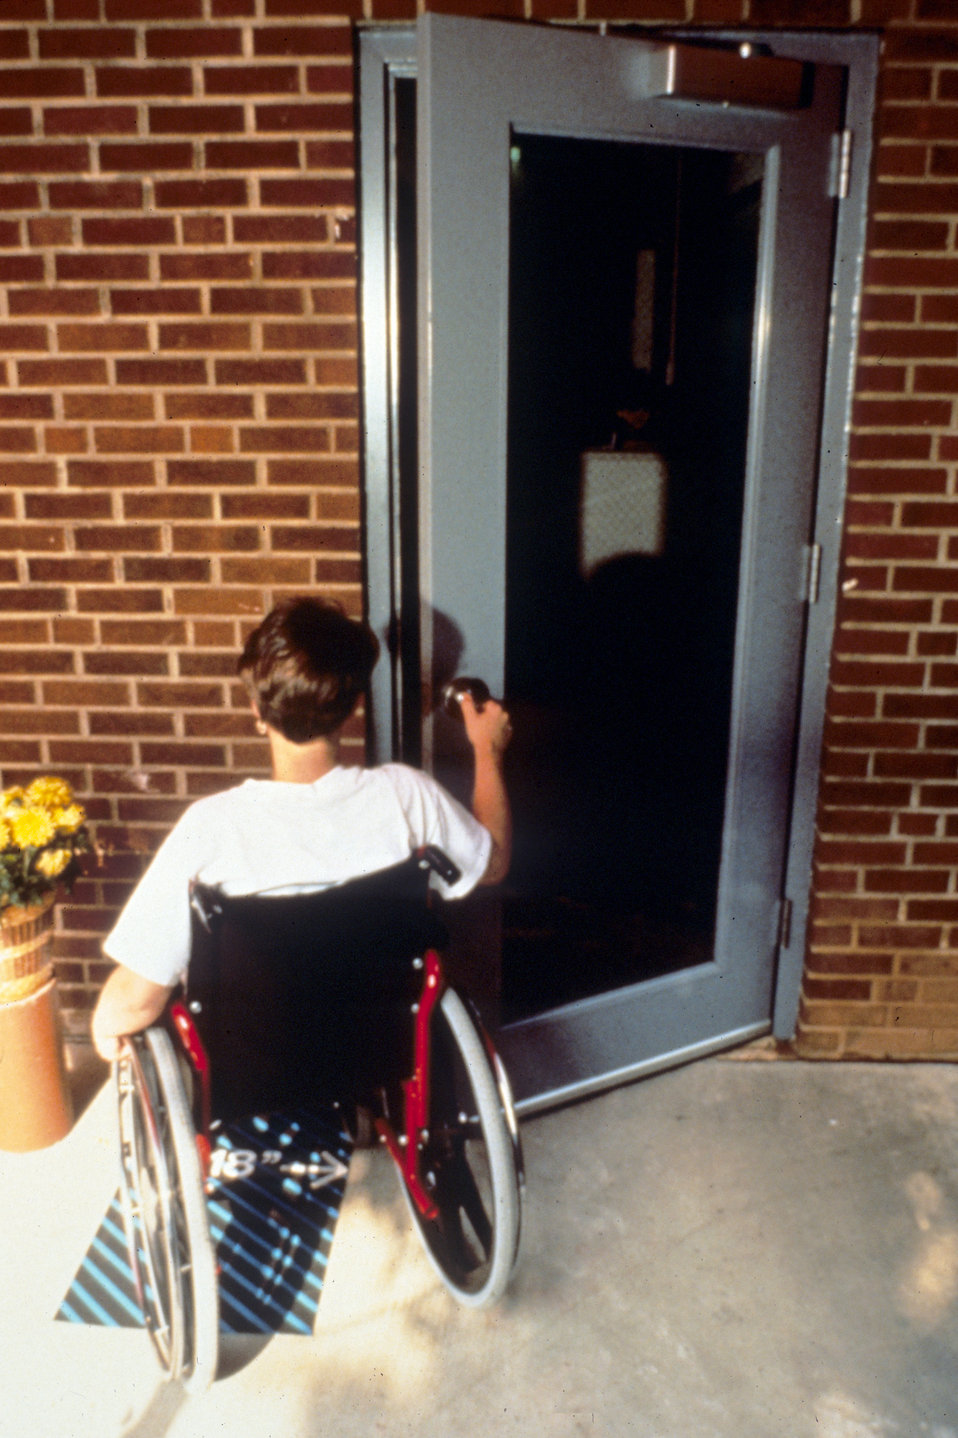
This 1997 image depicted a wheelchair-seated woman as she was about to pass through a doorway that had been designed with ample space to maneuver, for mobility-challenged visitors. She was photographed here as she was using the space to the side of the door, in order to pull the door open without it striking her wheelchair, or requiring her to make multiple minute adjustments, in order to get out of the way as the door would swing closed. Maneuvering space beside a door is helpful for all people, but especially people using mobility aids, and especially in the case of common-space entrances and exits.